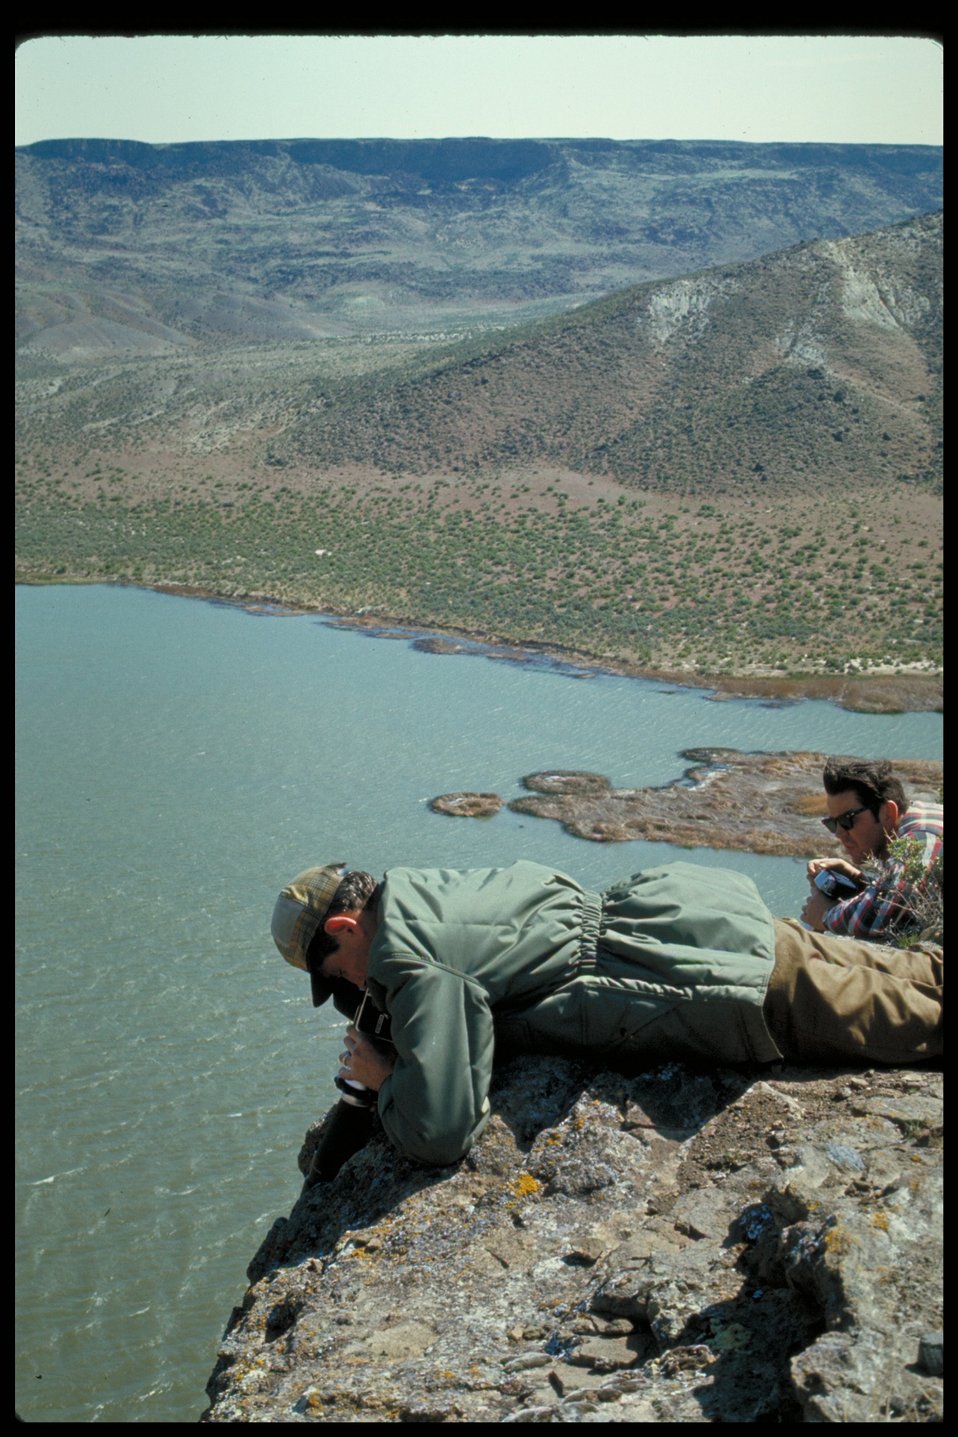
Roping down to Eagle nest Swan Falls Birds of Prey National Conservation Area Owyhee Field Office LSRD Lower Snake River District